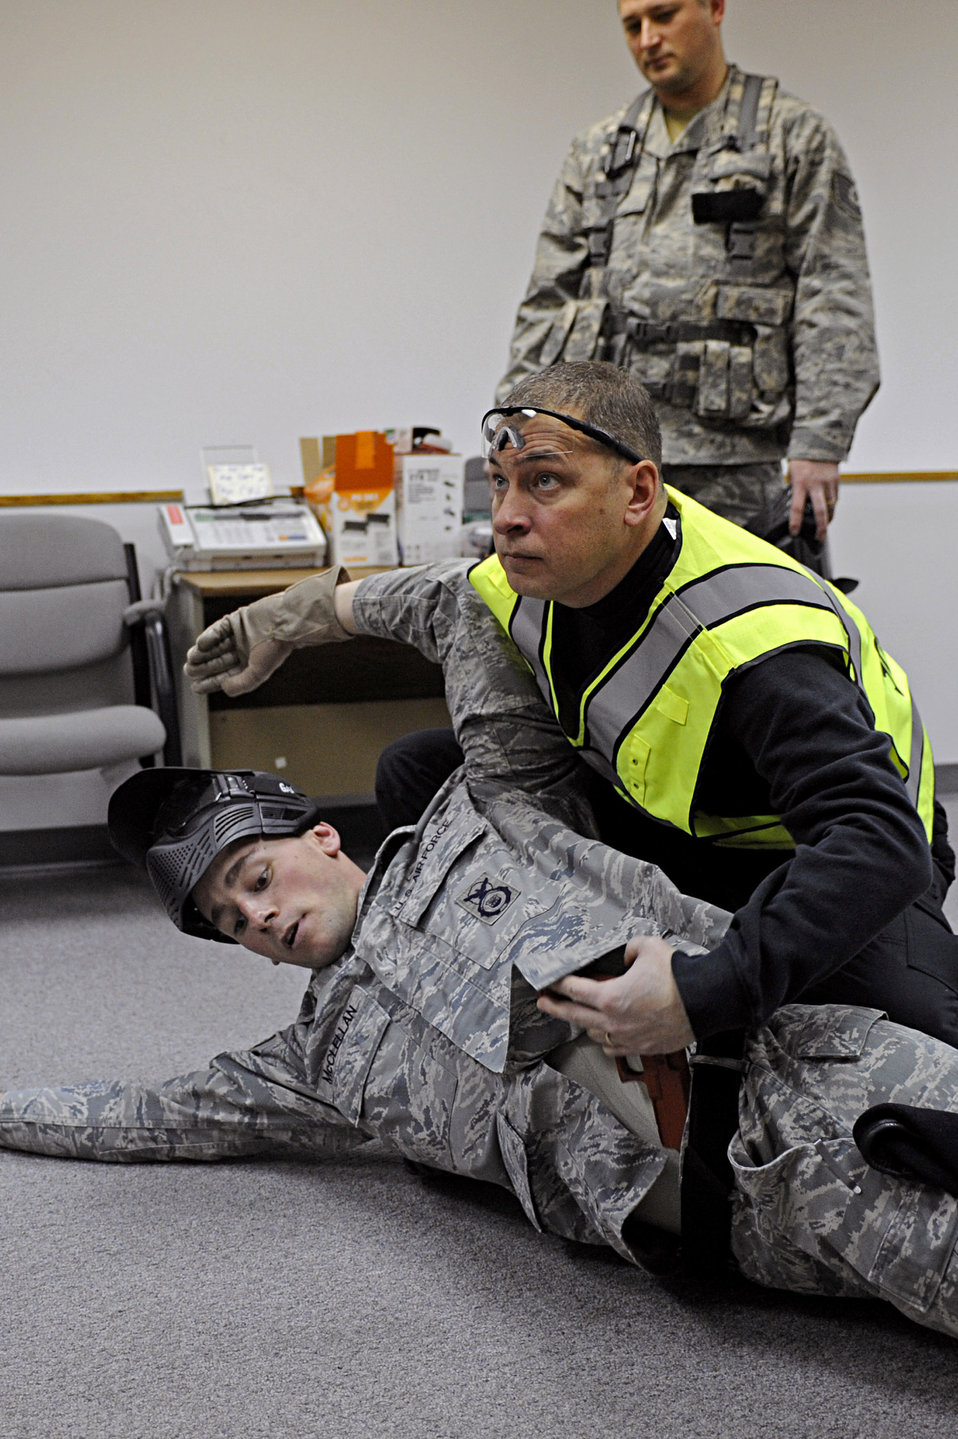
Ellsworth Airmen participate in training with local sheriff's department

Sgt. Mike Ghents reviews an armed threat scenario with 28th Security Forces Squadron team members Jan. 25, 2010, at Ellsworth Air Force Base, S.D. Officers from the Pennington County Sheriff's Department provided 28th SFS members multiple scenarios to help Airmen understand and develop tactics against them. Sergeant Ghents is the Pennington County Sheriff's Department school liason officer.